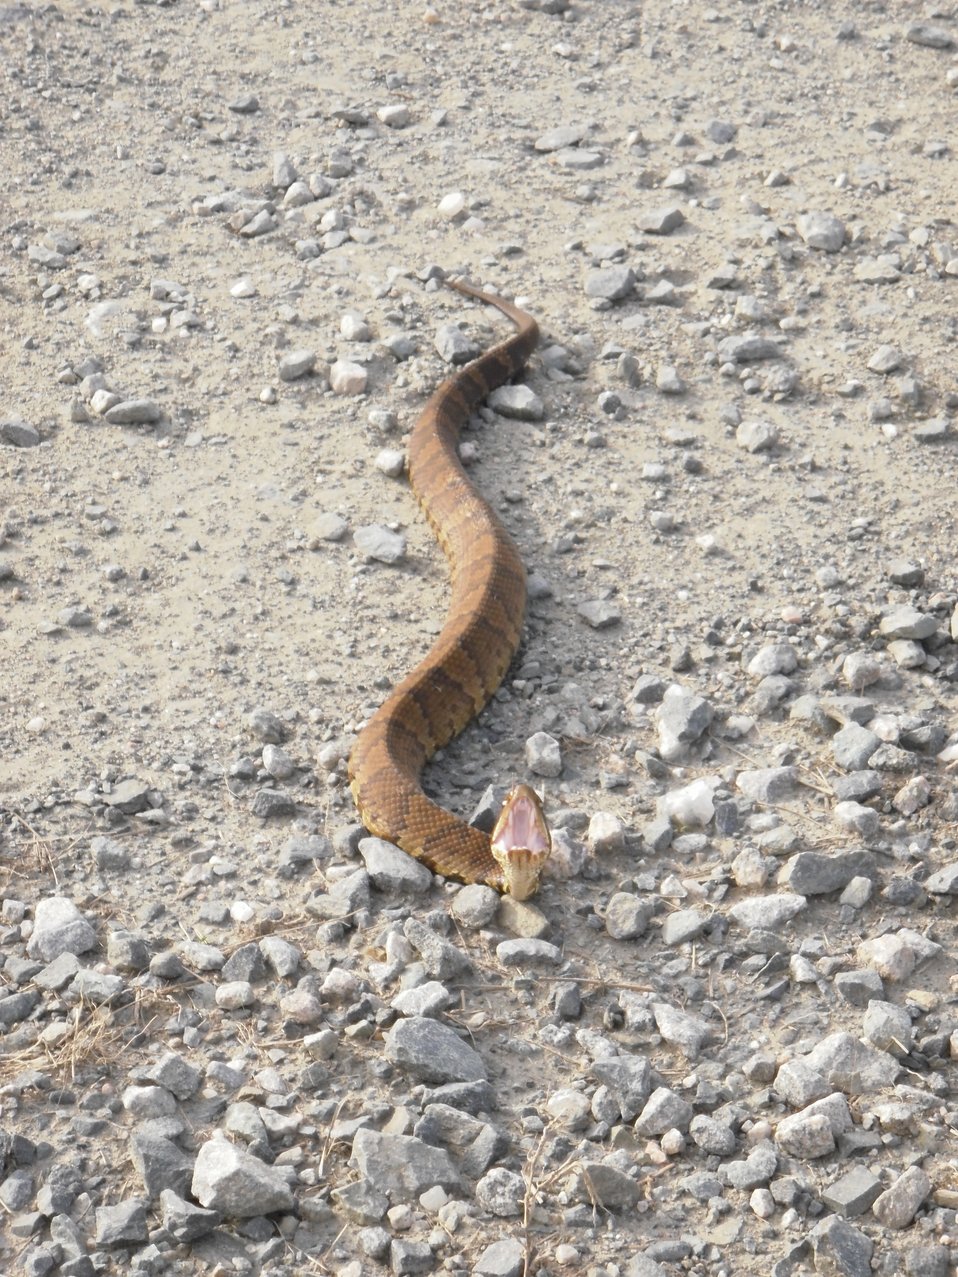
Cottonmouth at Back Bay National Wildlife Refuge in Virginia.